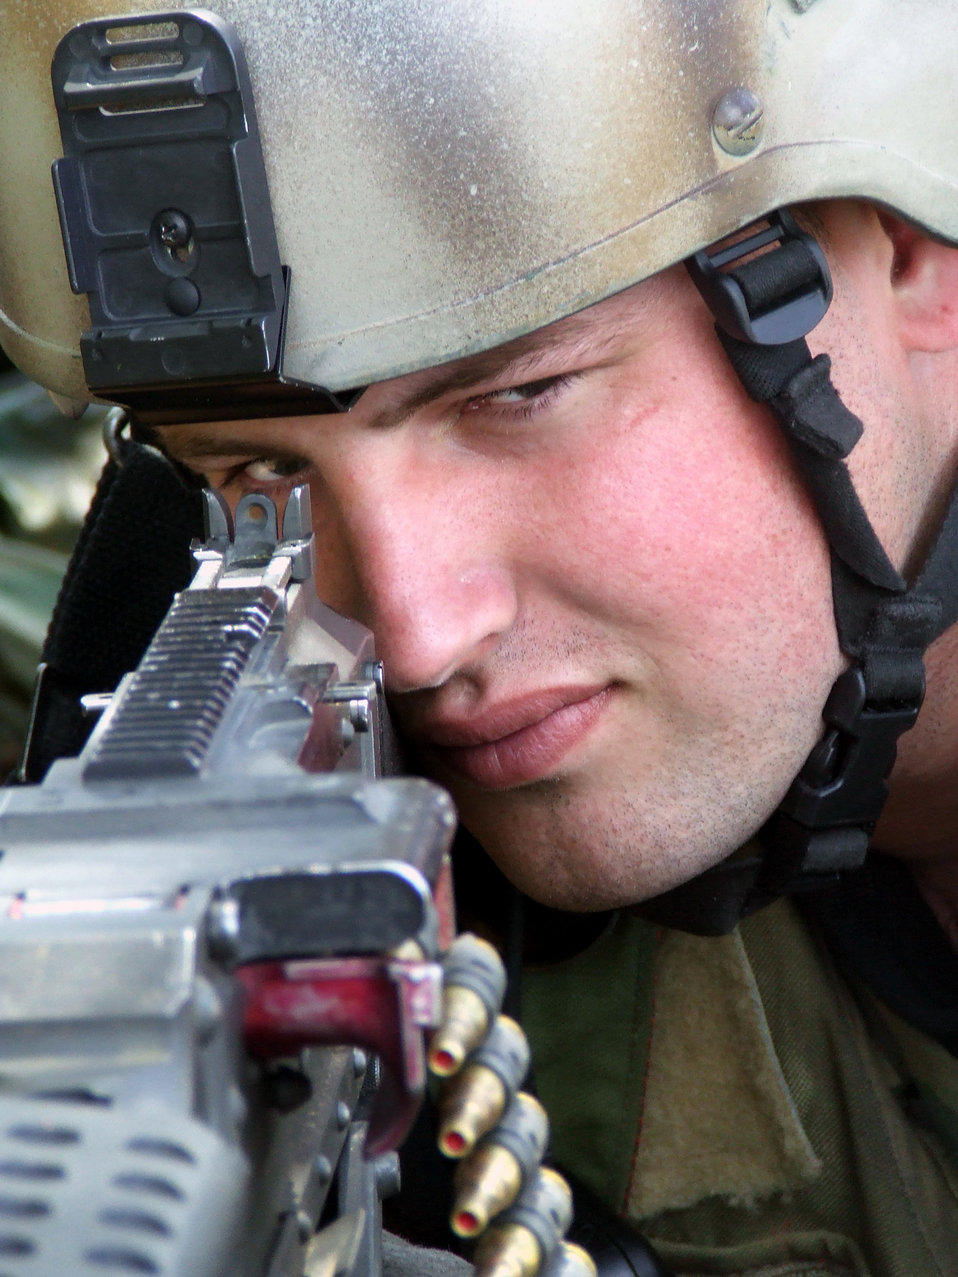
Eagle Flight takes flight

Airman 1st Class Tyler Wildman takes aim with a blank-round-equipped M-60 machine gun at a security checkpoint for the contingency response group at Naval Air Engineering Station Lakehurst, N.J., June 22. Airman Wildman participated in Air Force Exercise Eagle Flag 07-5, operated by the U.S. Air Force Expeditionary Center at Fort Dix, N.J.